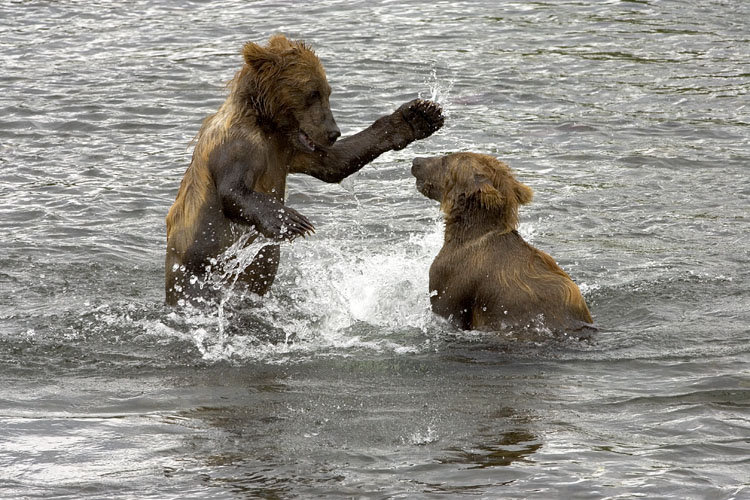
KOD Hildebrand (32)

Kodiak National Wildlife Refuge- Wildlife